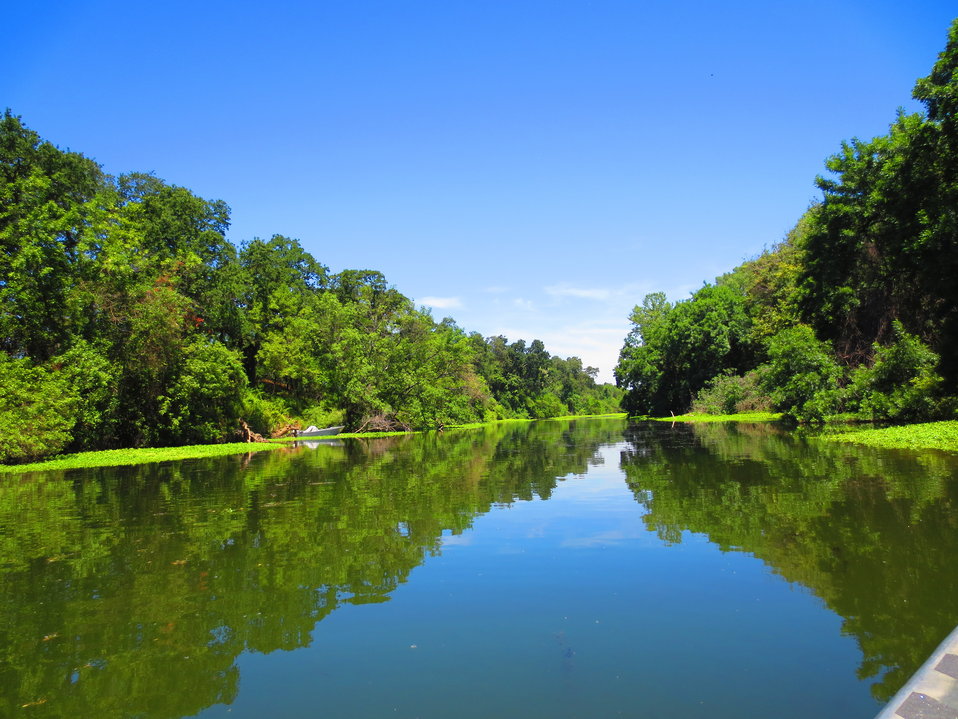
View of the Sacramento River north of the Rio Vista Unit on the Sacramento River NWR.